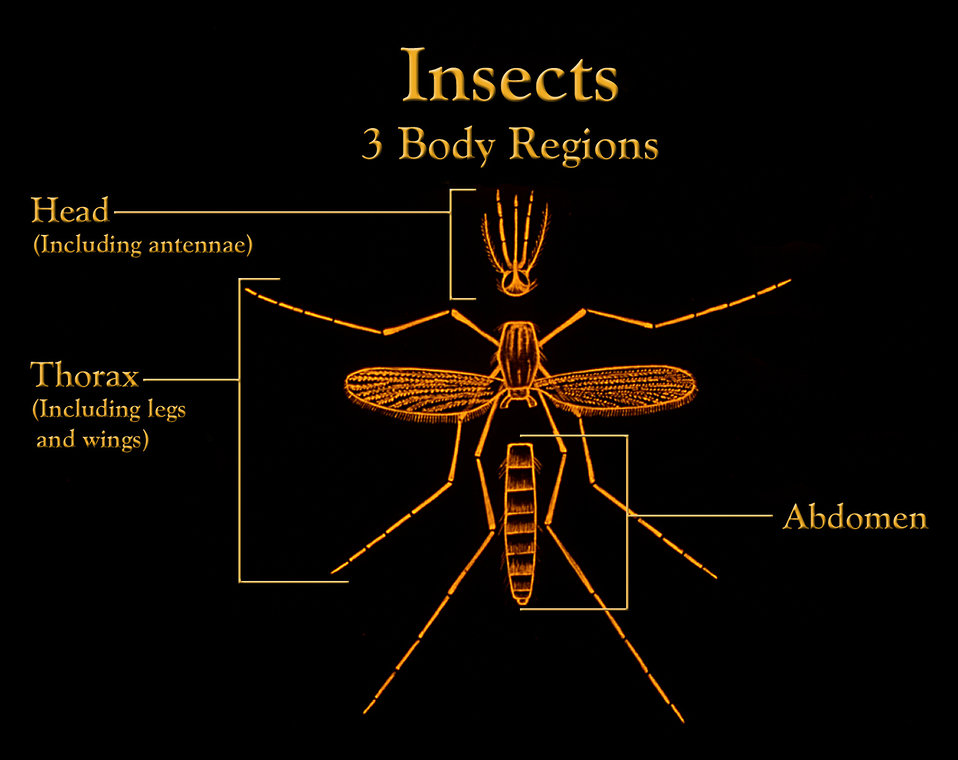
This drawing depicts the anatomic features found in members of the Class Insecta showing a mosquito as an example.